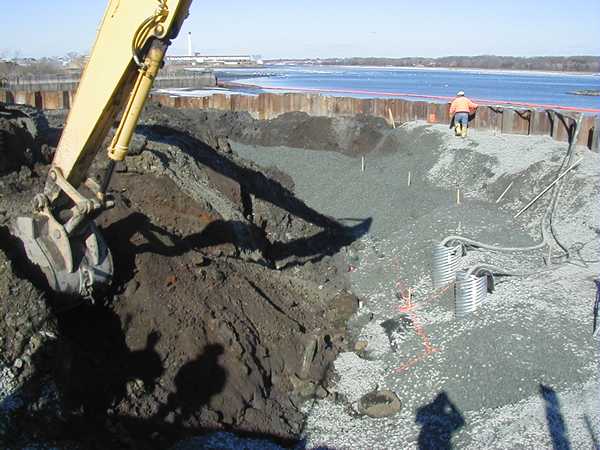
Spring 2001, Construction activity for the new CSO